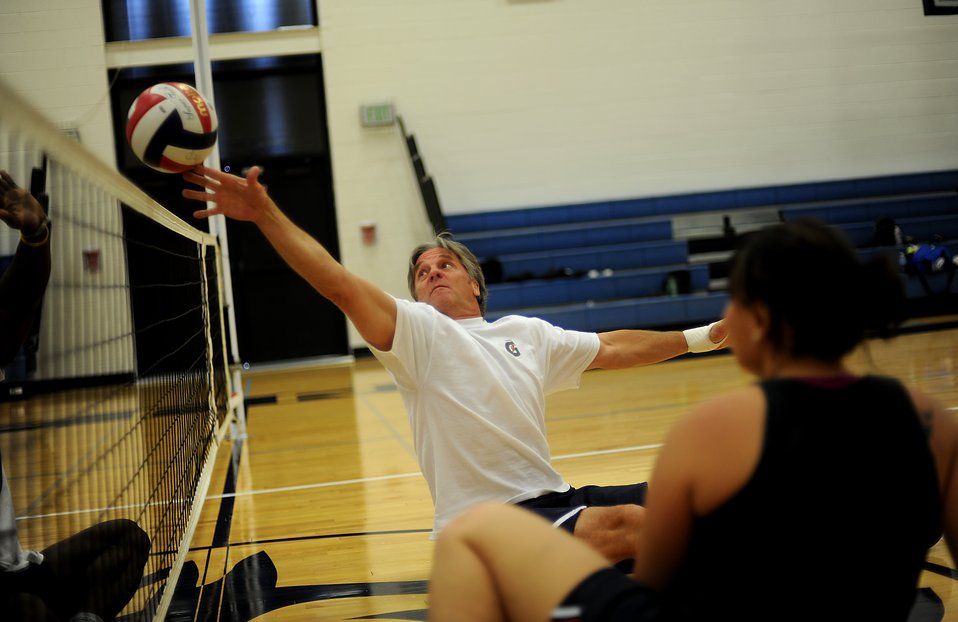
Warrior Games selection camp concludes for AF

Kenneth L. Gestring, a retired master sergeant, hits the ball over the net March 29, 2012, while playing volleyball at the Air Force Academy, Colo., during the Air Force Wounded Warrior Games selection camp.